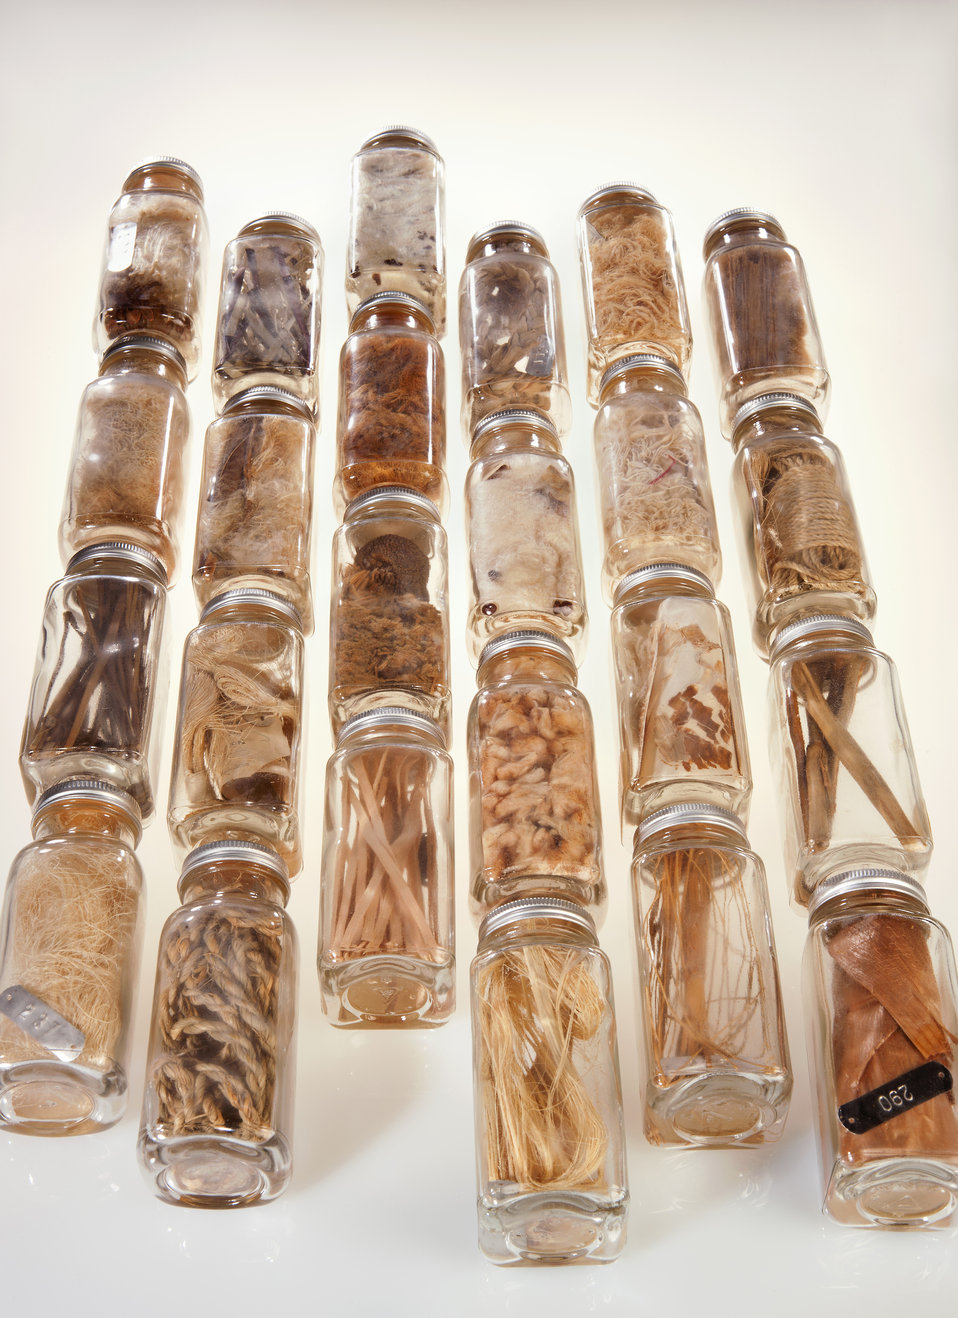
Approximately 350 specimens make up the U.S. Department of Agriculture’s (USDA) Fiber Collection housed at the USDA National Agricultural Library (NAL) in Beltsville, MD on Oct. 4, 2003.